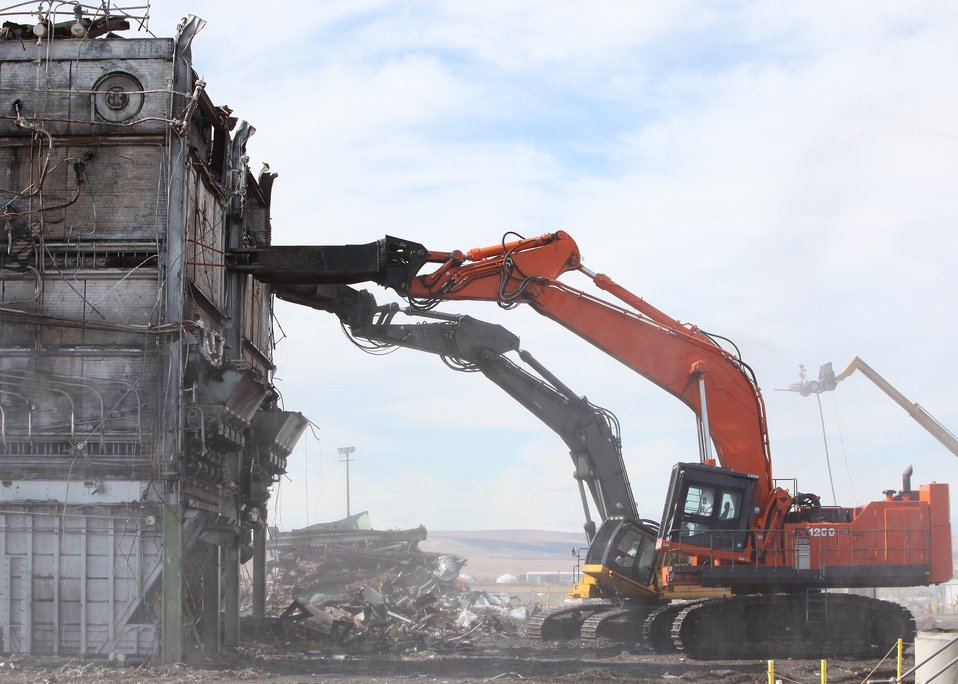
Richland 284-W Power House Demolition

Workers used explosives to demolish the 284-W Power House’s exhaust stacks, bag houses and water tower in February 2011 and finished demolition of the main building in September.